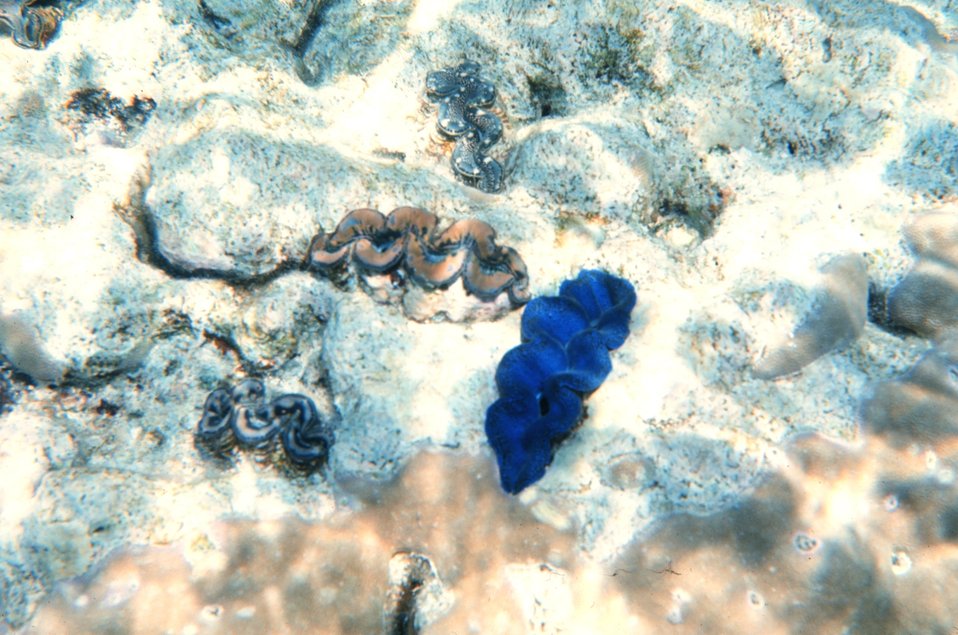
Tridacna Crocea - Giant clam embedded in coral Demonstrating variable zooxanthellae colorization in mantle